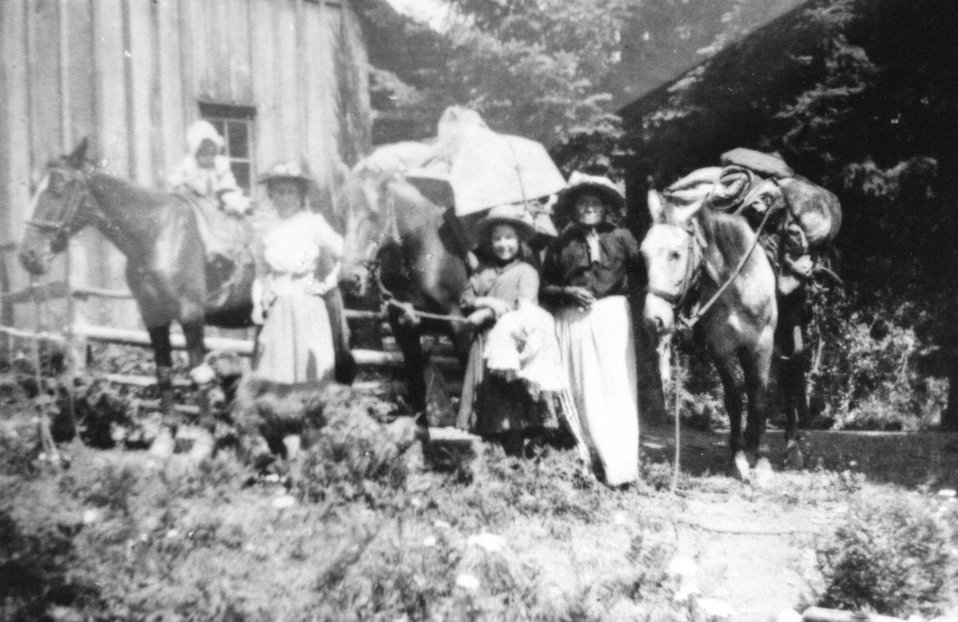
Packing. (L - R) Oberon Billings, Anna Billings, Effie Backman, and Adeline Billings